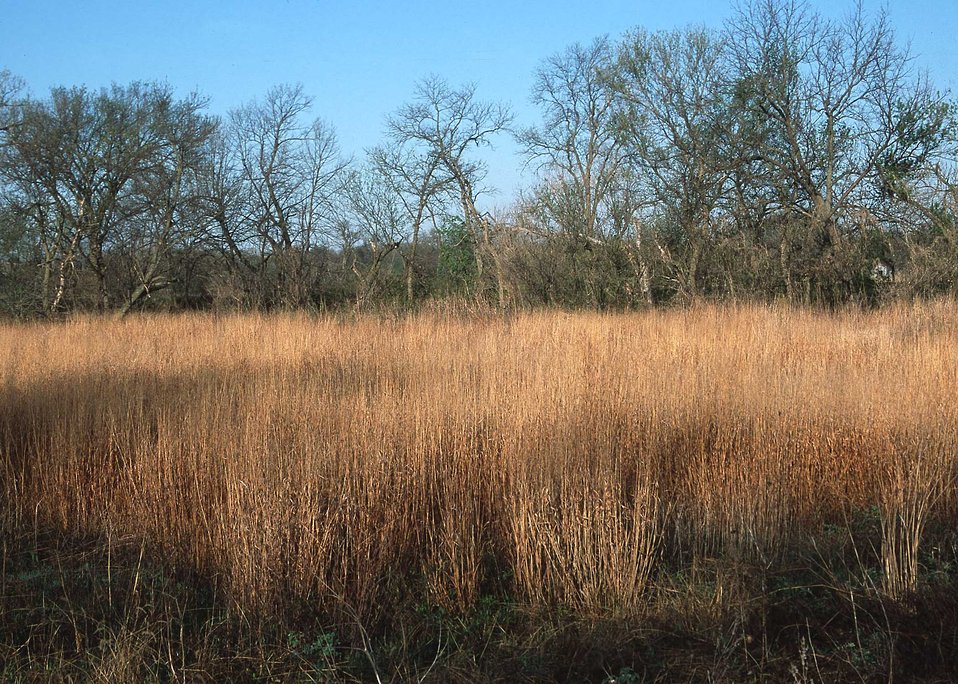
Conservation buffers seeded to Prairie grasses border riparian habitat and a cultivated field. Kansas.